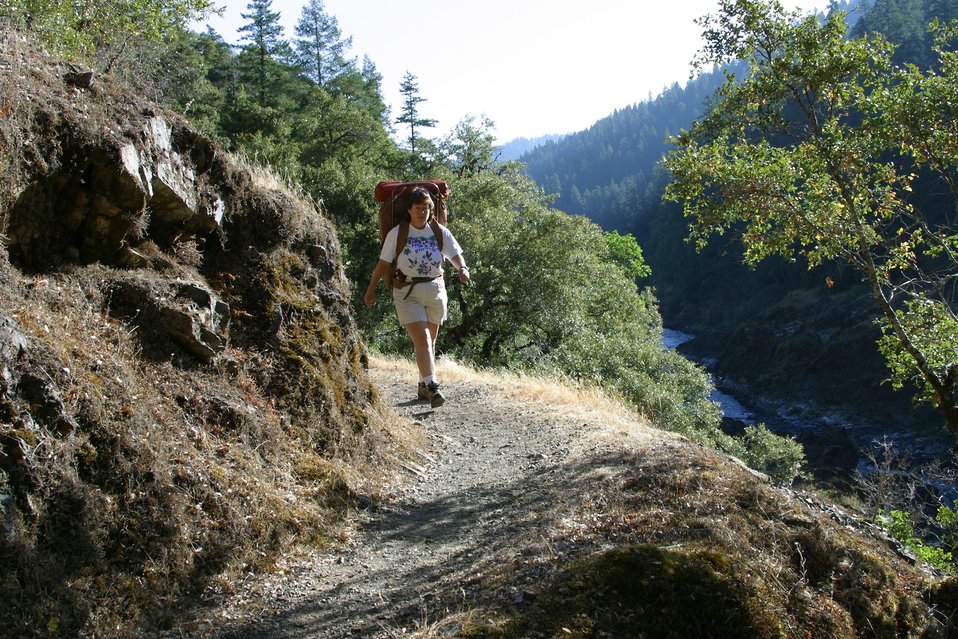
Hiking the Rogue River Trail between Mule Creek and Blossom Rapids.